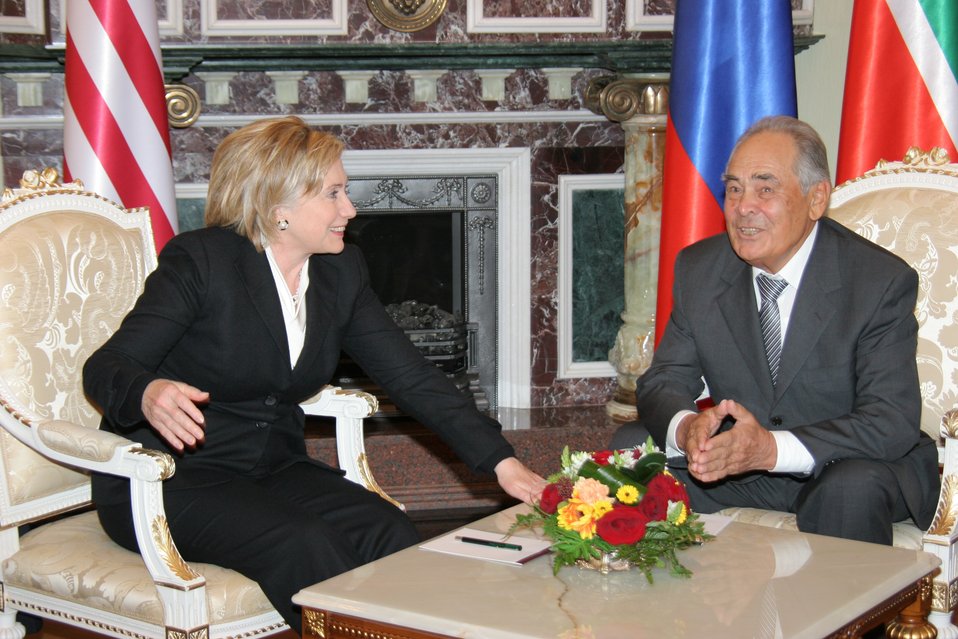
Secretary Clinton With President Shaimiev

U.S. Secretary of State Hillary Rodham Clinton and President Shaimiev discuss diversity issues in Kazan, Russia October 14, 2009.